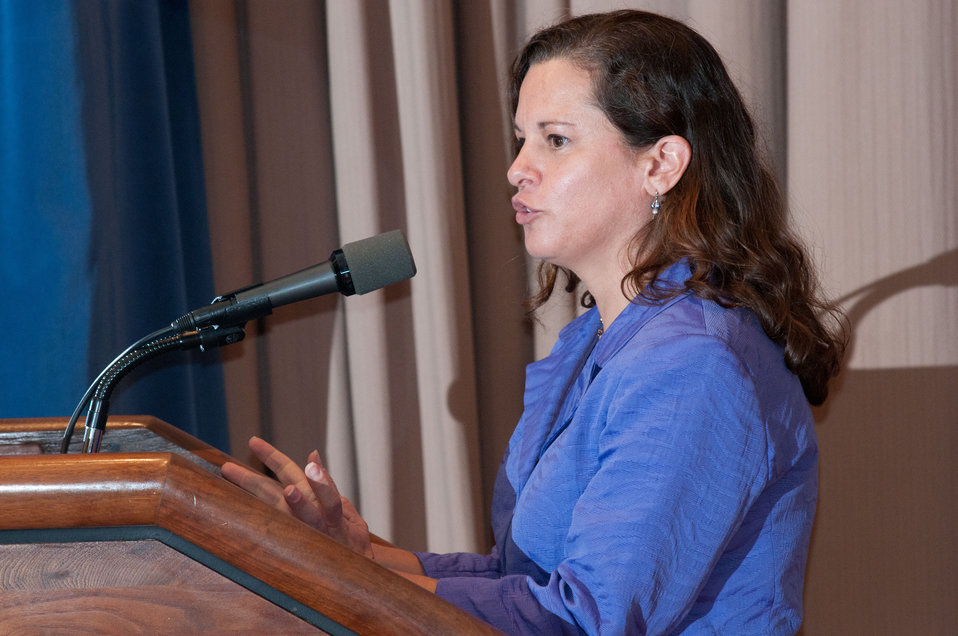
Graduation day of the 2011 U.S. Department of Agriculture (USDA) Executive Master Gardeners, on Tuesday, November 8, 2011 in Washington, DC. During the past six-weeks, students contributed 40-hours of volunteer time, completed studies and testing to receive their certificates today as an Executive Master Gardener. Many of the sessions occurred before work hours, during lunchtime or at community garden project sites such as Powell Middle School. USDA challenges its employees to establish People's Gardens at USDA facilities worldwide or in community gardens. People's Gardens vary in size and type, but all have a common purpose - to help the community and the environment. To learn about the People’s Garden Initiative visit www.usda.gov/wps/portal/usda/usdahome?contentid=peoples g....